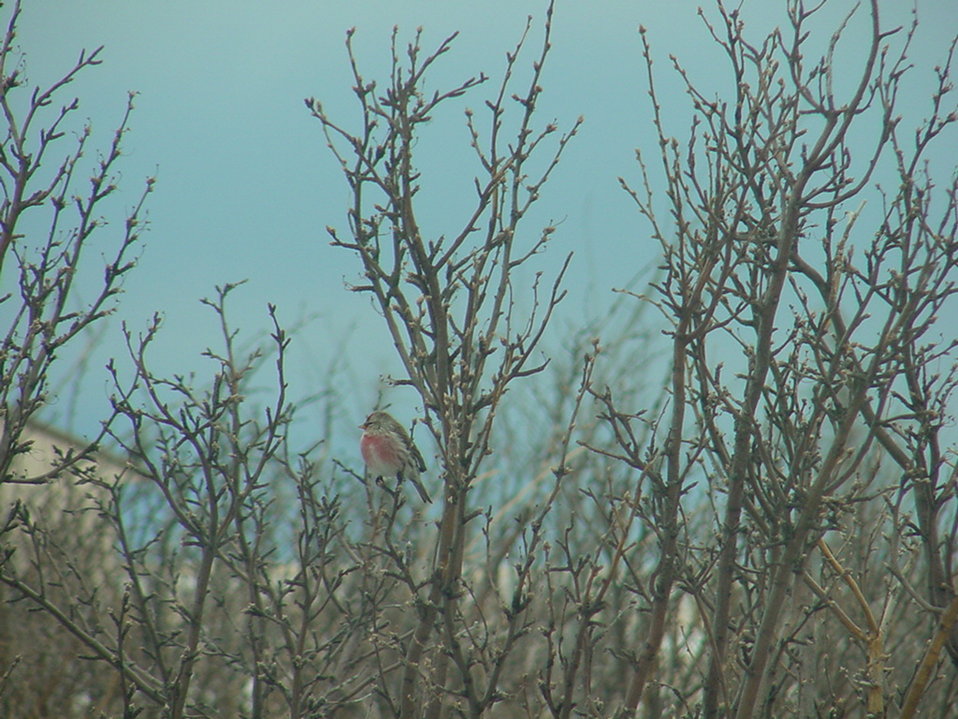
Redpoll Hides in the Bushes

The lands of Benton Lake National Wildlife Refuge were established to protect and provide habitat for migratory birds that cross State lines and international borders and are by law a Federal trust responsibility.

The refuge is of great value to waterfowl and shorebirds, as well as other migrating water-dependent bird species, because of the diversity of wetland and upland habitats that provide for the diverse life cycle needs of these species.